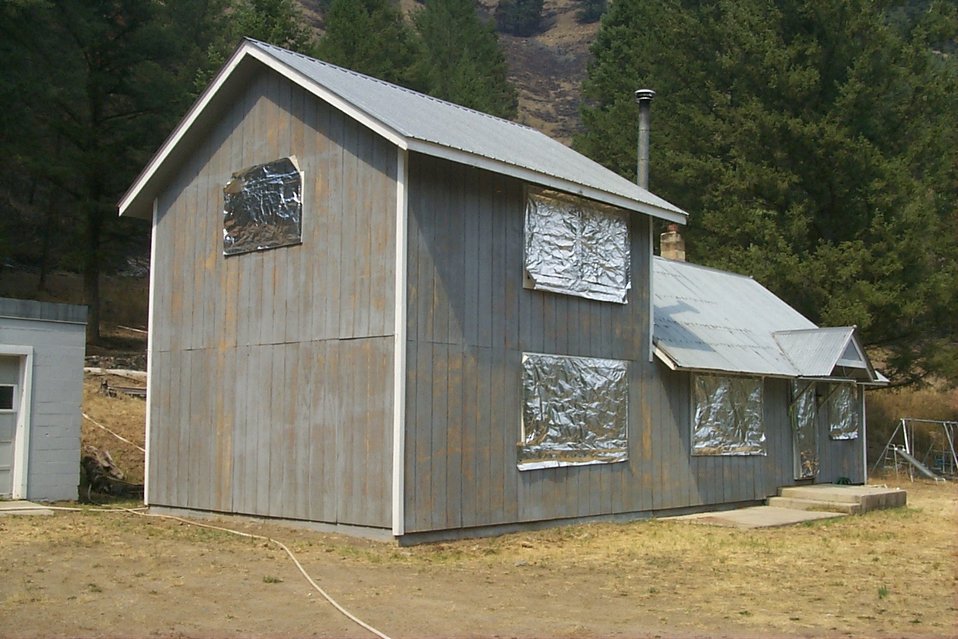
Fire retardant measures Fire Clearwater Fire Salmon Field Office USRD Upper Snake River District